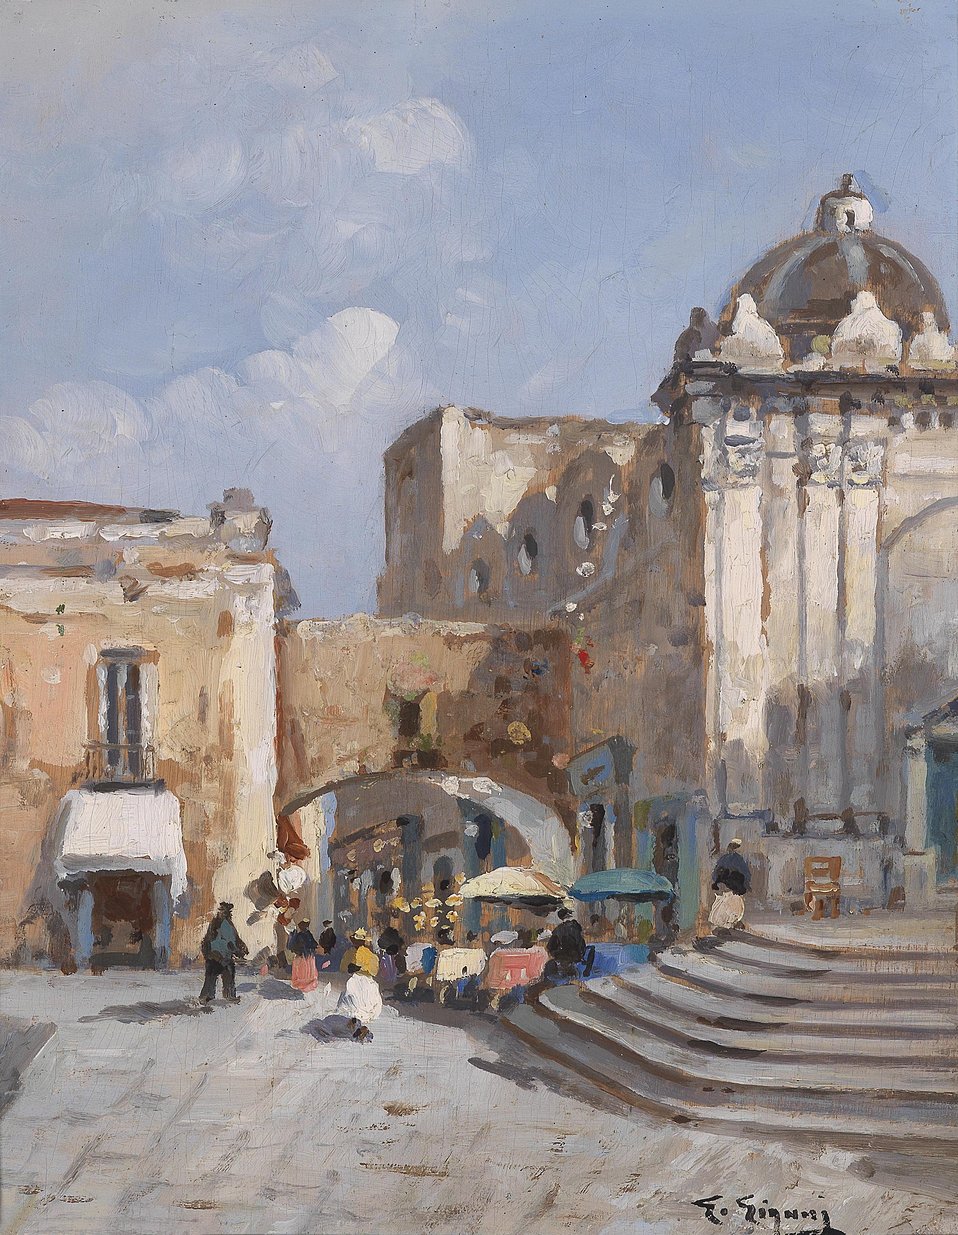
Deutsch: Die Kirche Santo Stefano, Capri, undeutlich signiert, Öl auf Holz, 27 x 21 cm